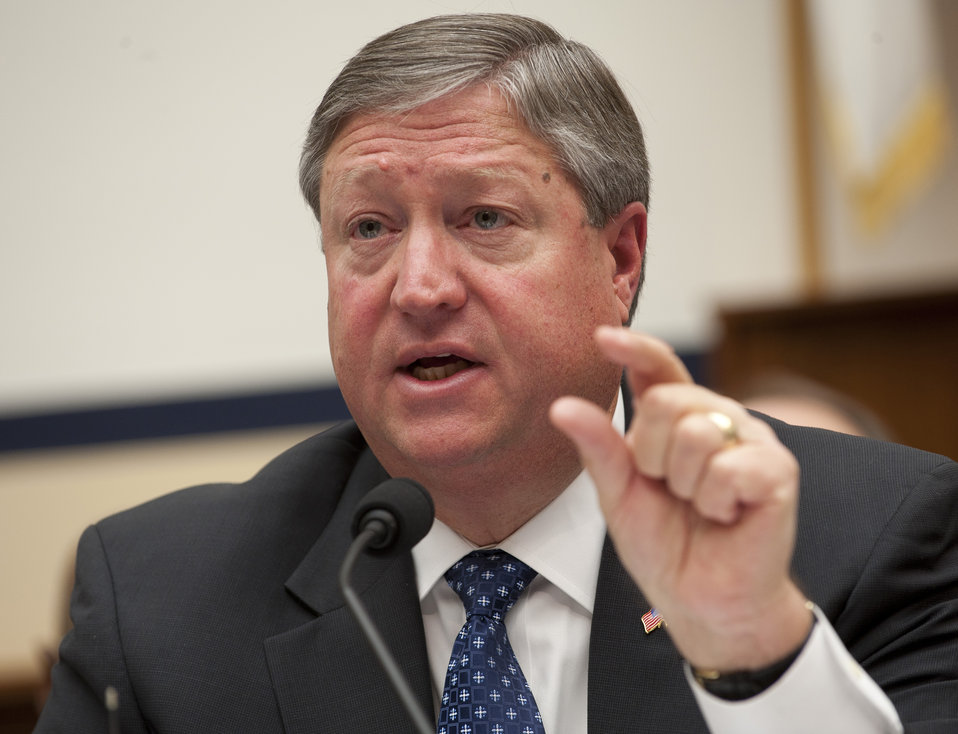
AF leaders' Capitol Hill testimony

Secretary of the Air Force Michael Donley answers a question during a
hearing of the House Armed Services Committee, Feb. 28, 2012, in Washington,
D.C. Both Donley and Air Force Chief of Staff Gen. Norton Schwartz were on
Capitol Hill to discuss the Air Force's Fiscal Year 2013 National Defense
Authorization Budget Request.